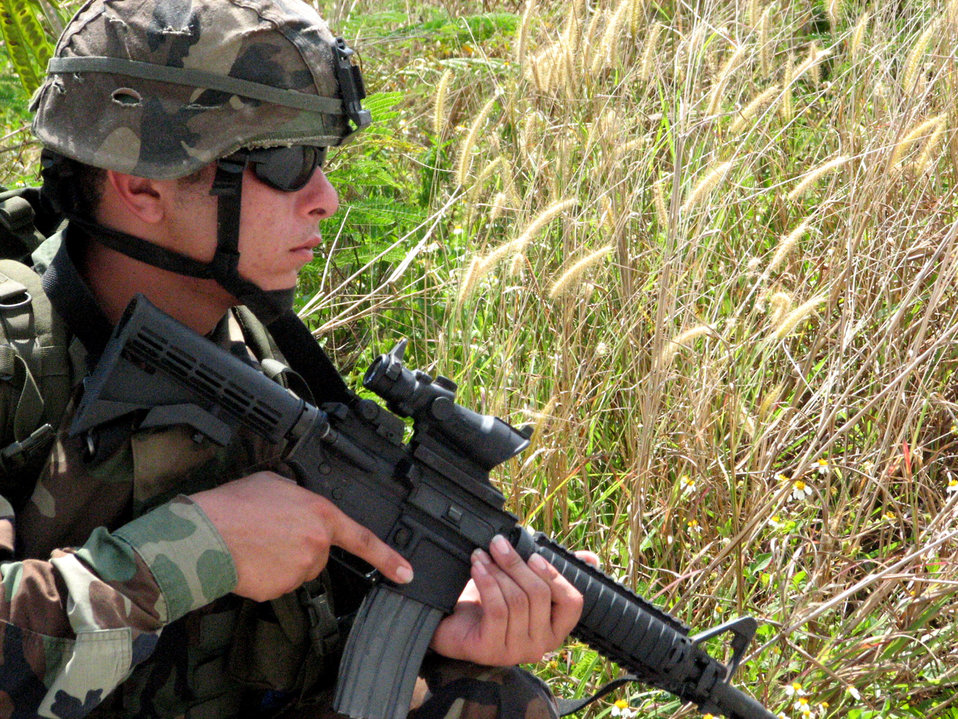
Anderson Airmen hone combat skills

An Airman assigned to the 36th Contingency Response Group at Andersen Air Force Base, Guam, takes a knee Feb. 27 during a patrol. Airmen from the 36th CRG conducted battle drills, including movement under tactical formations, reacting to direct and indirect fire and identification of improvised explosive devices.